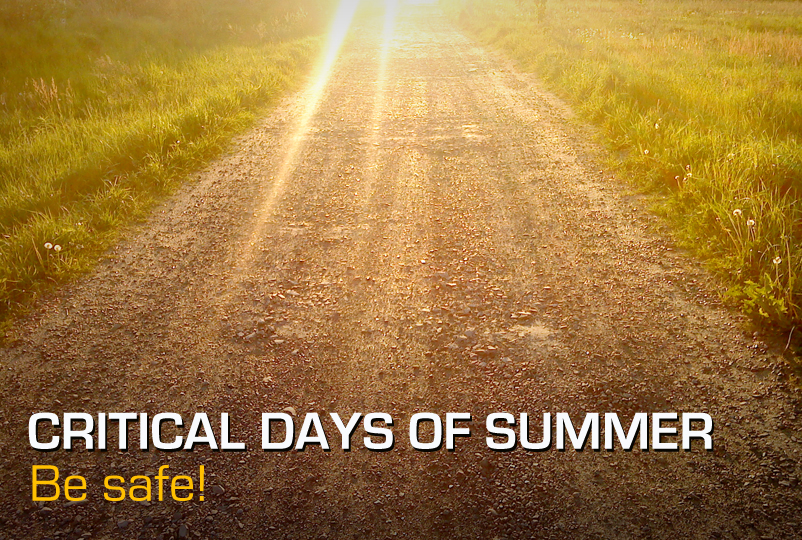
Critical Days of Summer